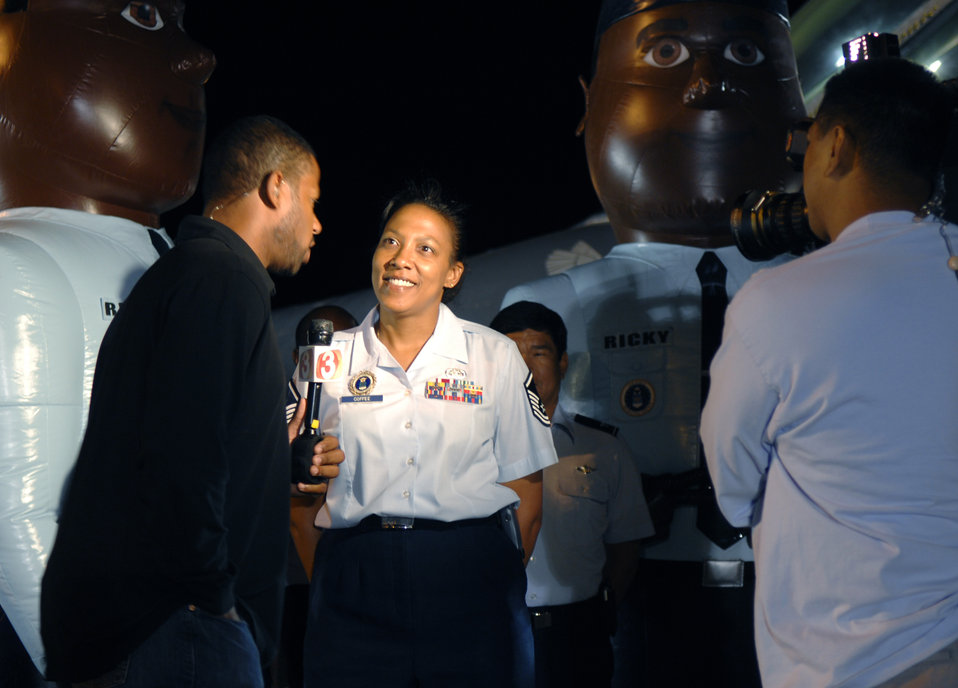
Weather forecaster brings morning show to Luke AFB

Brad Perry interviews Master Sgt. Stefanie Coffee during Good Morning Arizona, a morning show filmed at Luke Air Force Base March 22. The show featured demonstrations from different Air Force career fields and helped promote Air Force Week. Sergeant Coffee is with the 362nd Recruiting Squadron at March AFB, Calif.